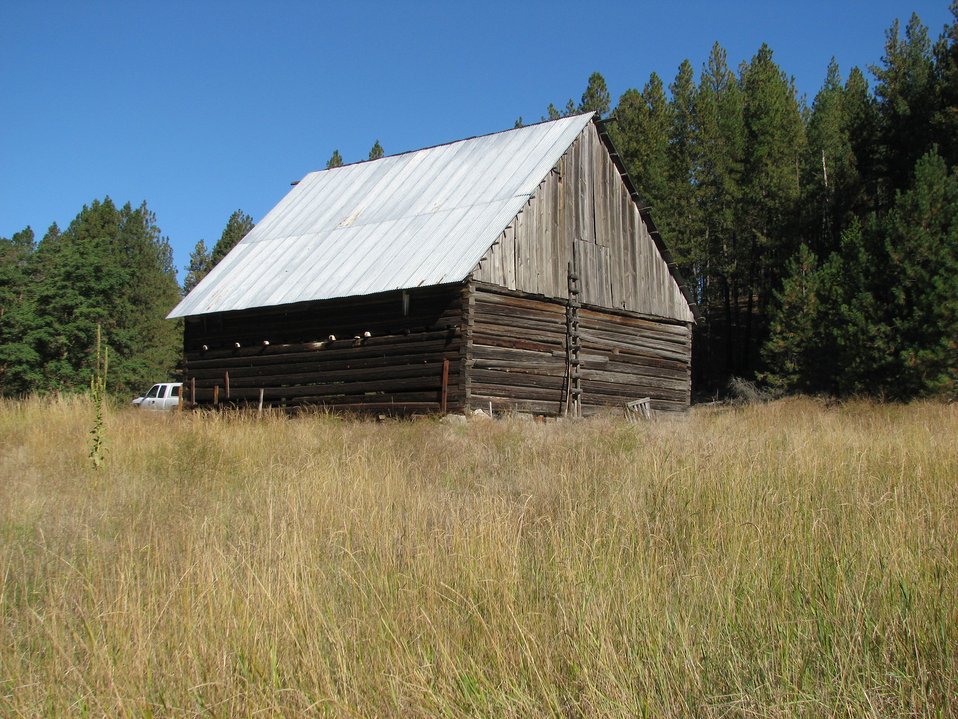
Hartnett Homestead2 -- Little Pend Oreille NWR, Washington